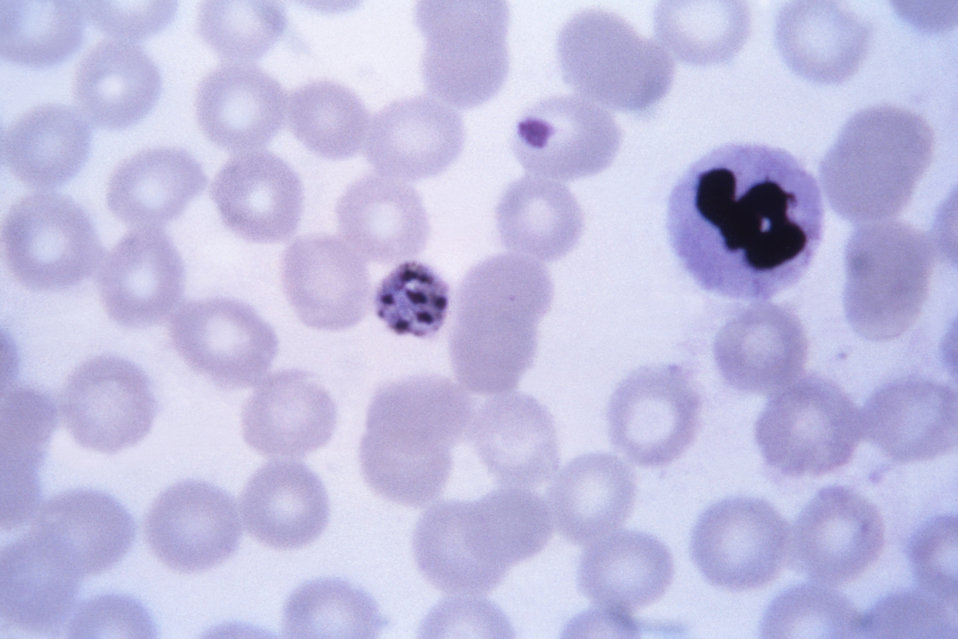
This thin film Giemsa stained micrograph depicts an older, though still immature Plasmodium malariae schizont.